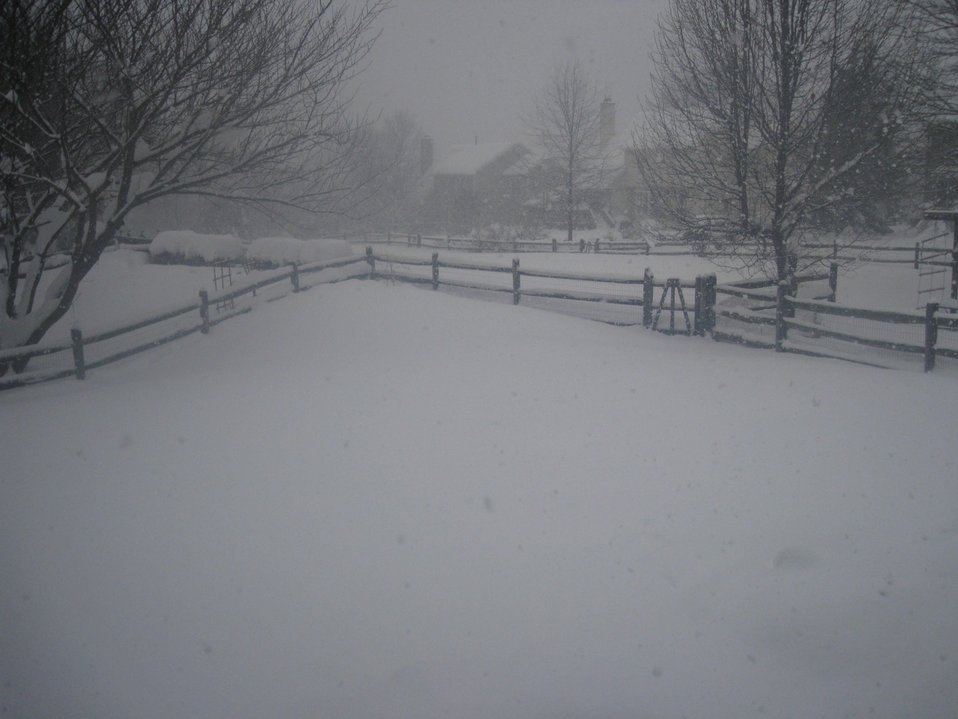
The third great storm of the winter of 2009/2010. This storm was a true blizzard with sustained winds of 35 mph or greater over much of the Mid-Atlantic region and areas acquiring for the third time between 1 and 3 feet of snow. About 10 miles north of this picture, 10-foot snow drifts stranded numerous motorists in the Frederick, Maryland, area.